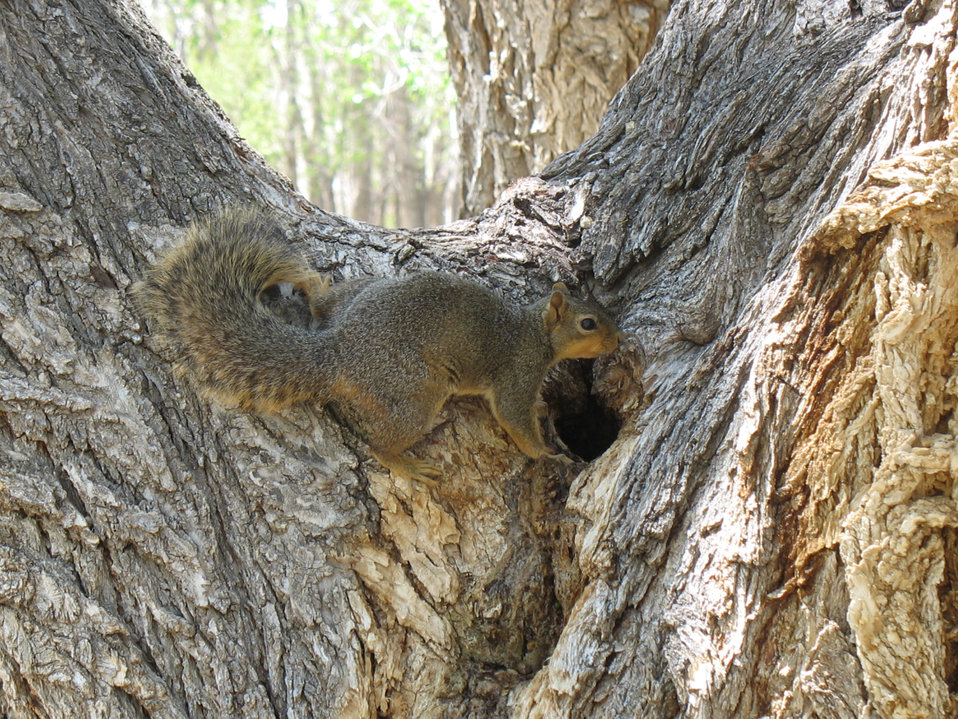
Fox squirrel, Crow Valley Campground, Briggsdale, CO.

Credit: Pedro 'Pete' Ramirez, Jr. / USFWS